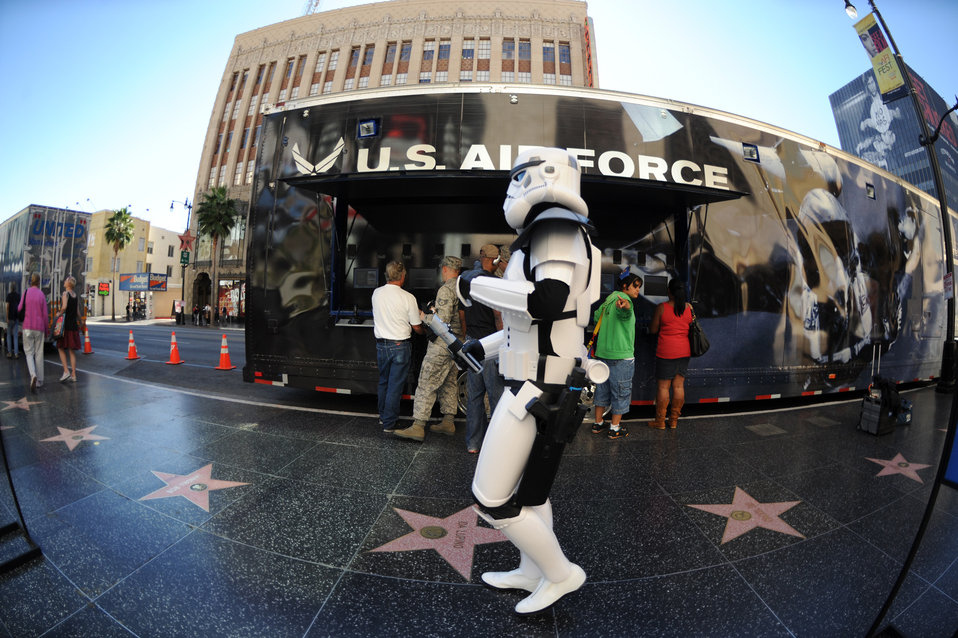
Air Force Expo in Hollywood

A man dressed as a Star Wars Storm Trooper walks by as Los Angeles residents and tourists play a flight video game off the U.S. Air Force's 80-foot-long tour van called, “Do Something Amazing,” during the Air Force Expo at Hollywood and Highland Boulevard in Los Angeles on Nov. 14. Air Force Week Los Angeles runs until Nov. 21 and has events throughout the area.